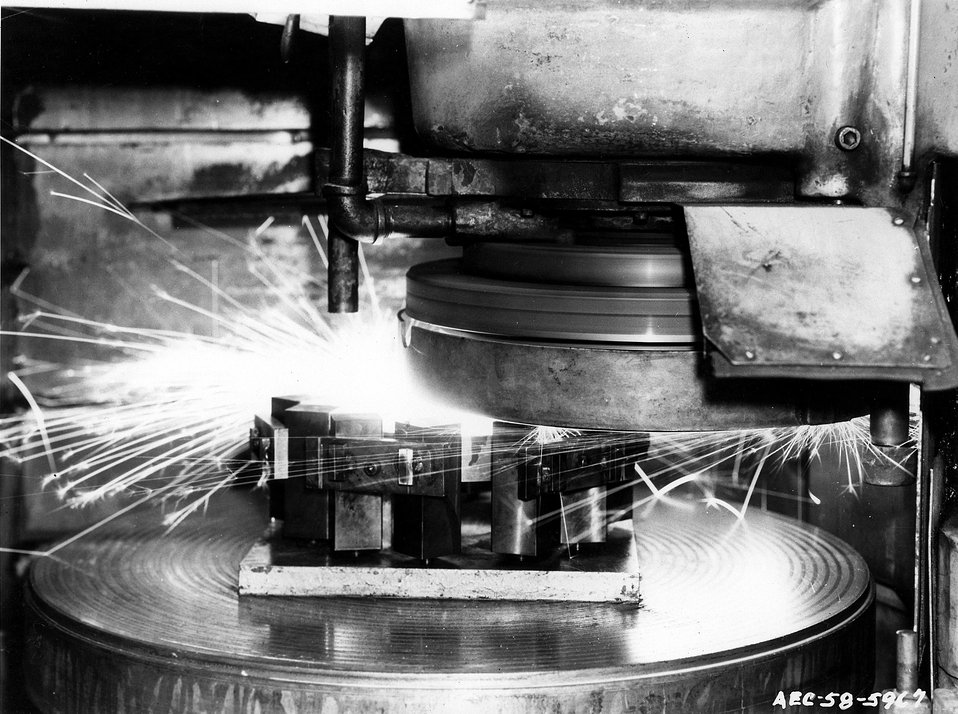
Thirty-six inch Blanchard grinder finishing blanket pieces of uranium to length. c. 1958